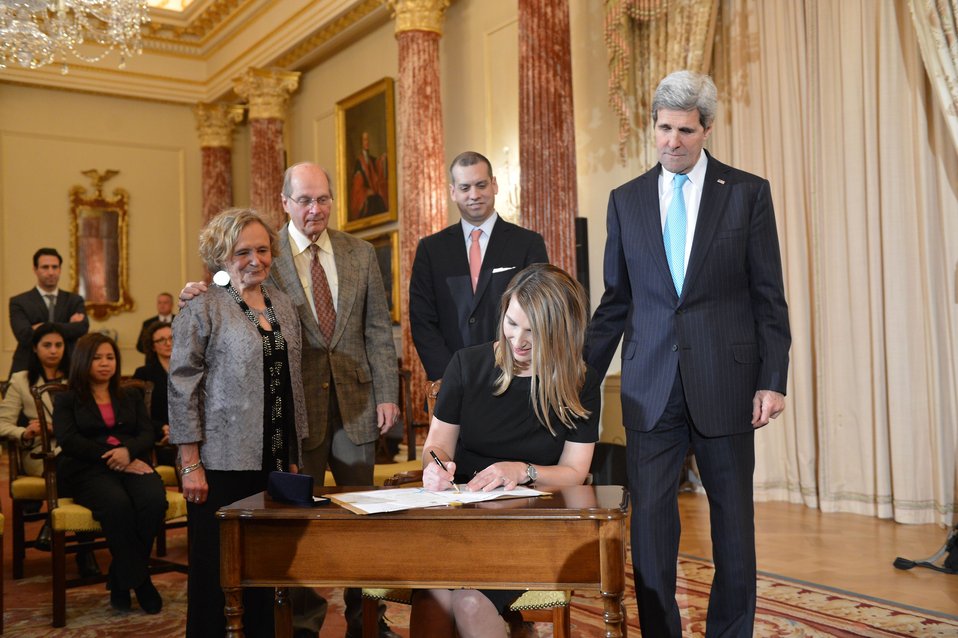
Deputy Secretary Higginbottom Signs her Appointment Papers

With U.S. Secretary of State John Kerry and her family looking on, Heather Higginbottom signs her appointment papers to become the Deputy Secretary of State for Management and Resources, at the U.S. Department of State in Washington, D.C., on January 30, 2014.